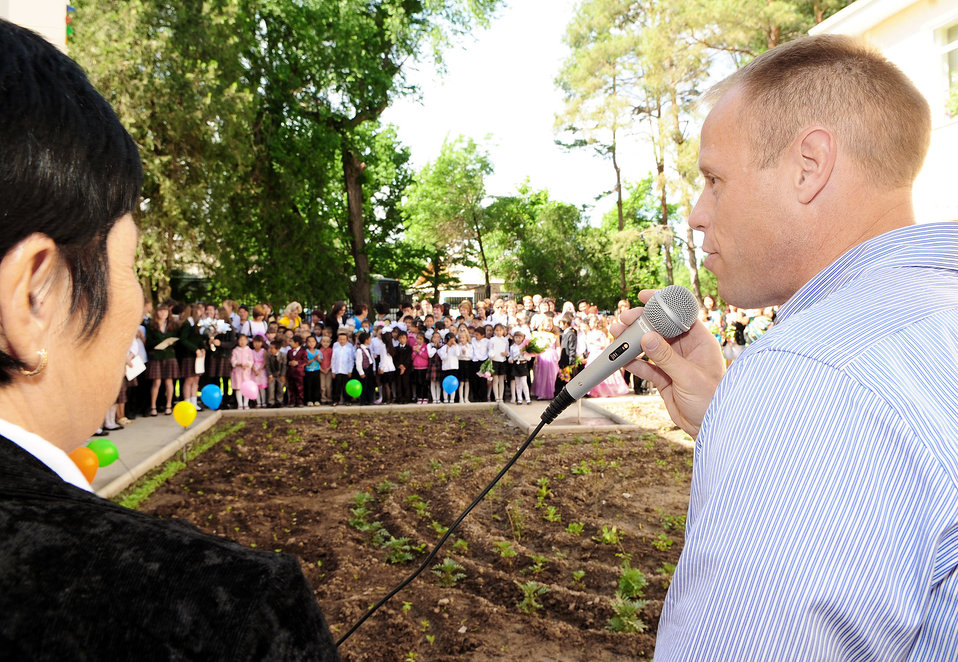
Birdik Village School culminates with ceremony, surprise

Col. Blaine Holt gives a brief speech during a graduation ceremony May 25, 2010, for children at the Birdik Village School, Kyrgyzstan. During his speech, Colonel Holt presented the school with a bus donated by the Transit Center at Manas, Kyrgyzstan. Colonel Holt is the director of the Transit Center.